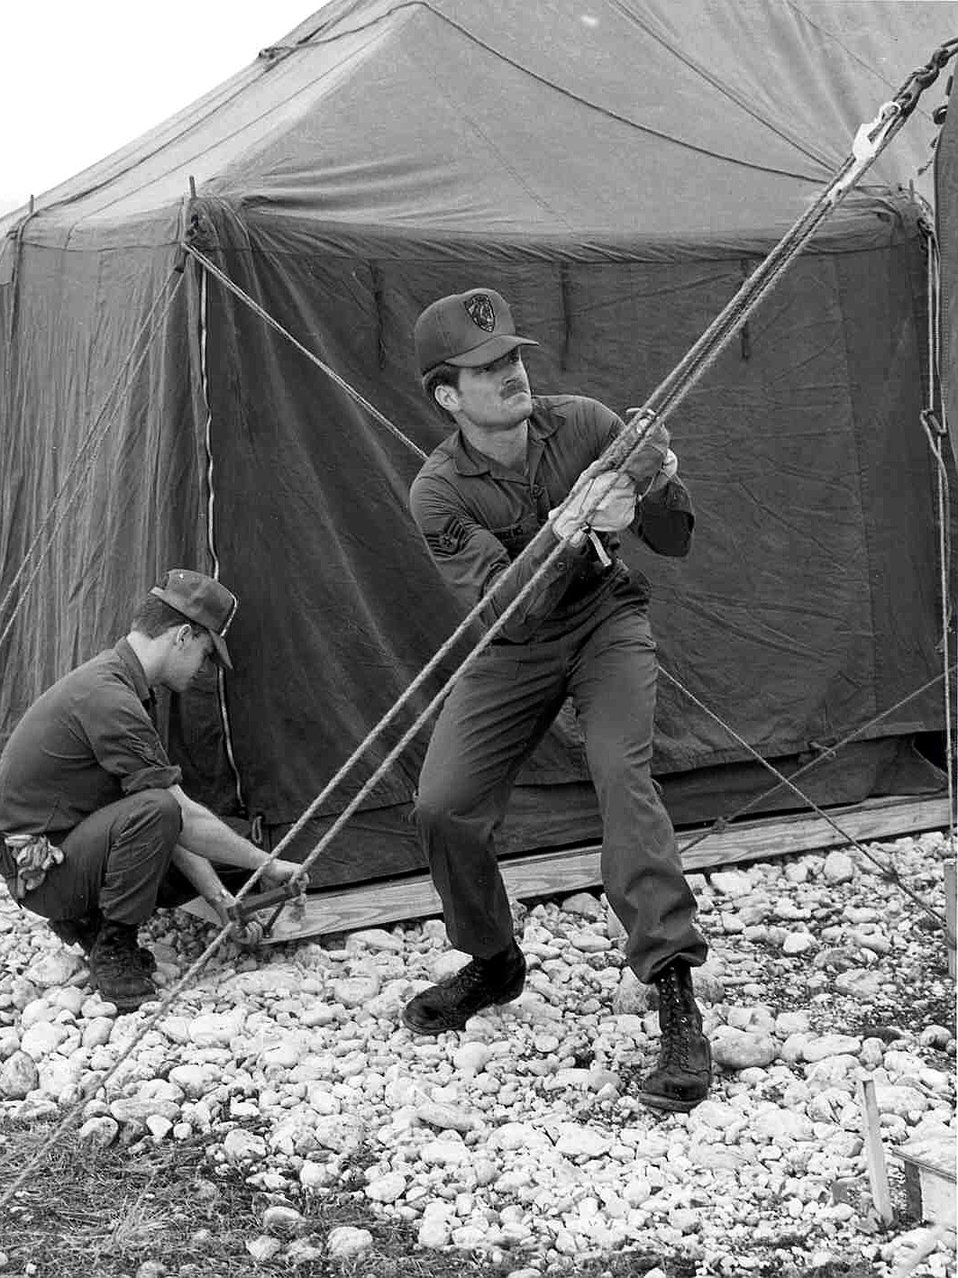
Setting up tent city in 1986

Two RED HORSE members begin setting up tents during 1986, at Aviano Air Base, Italy. The base needed to set up a tent city for an incoming rotational deployment.